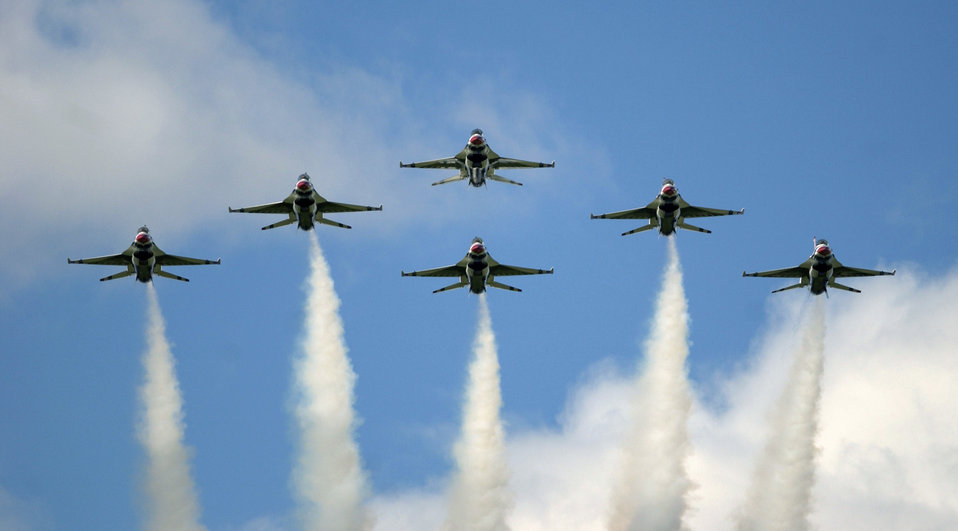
Thunderbirds

ANDERSEN AIR FORCE BASE, Guam -- The United States Air Force Demonstration Team